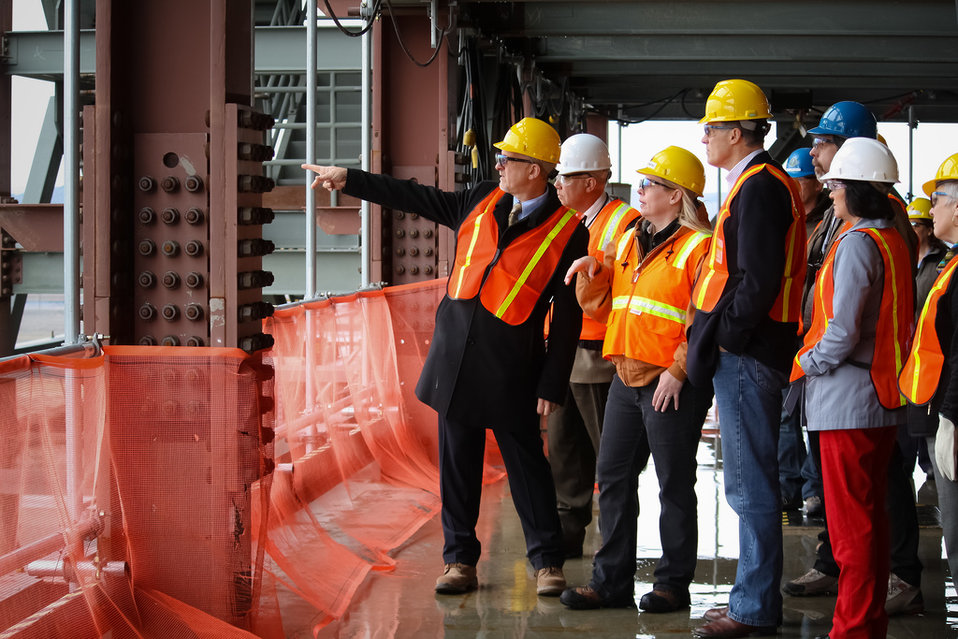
Inslee Visit at Hanford

Washington State Governor Jay Inslee, accompanied by Senior Advisor for Environmental Management Dave Huizenga, visits Hanford Tank Farms and Waste Treatment Plant